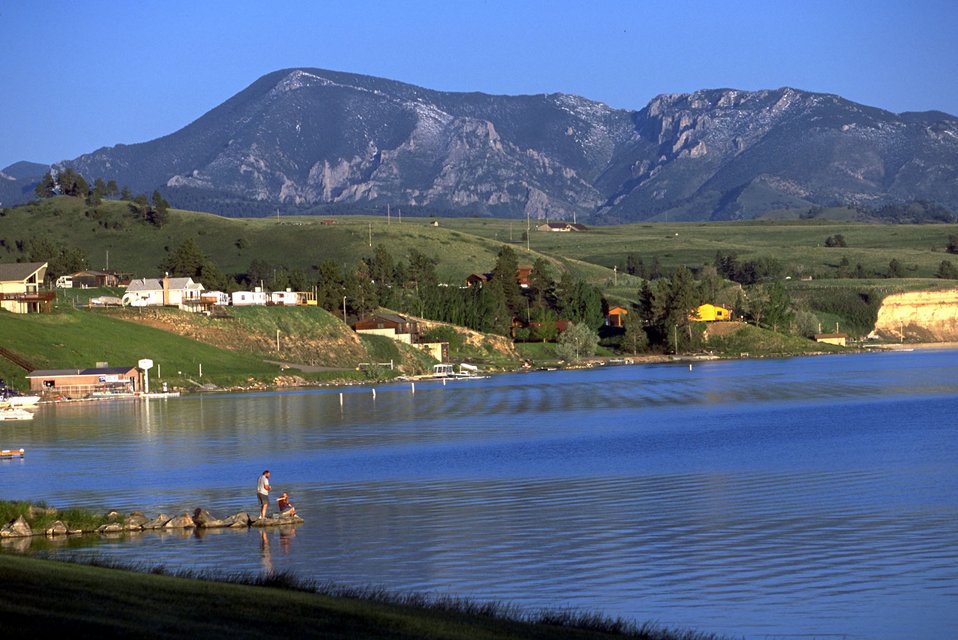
Fishing in Holter Lake near the campgrounds